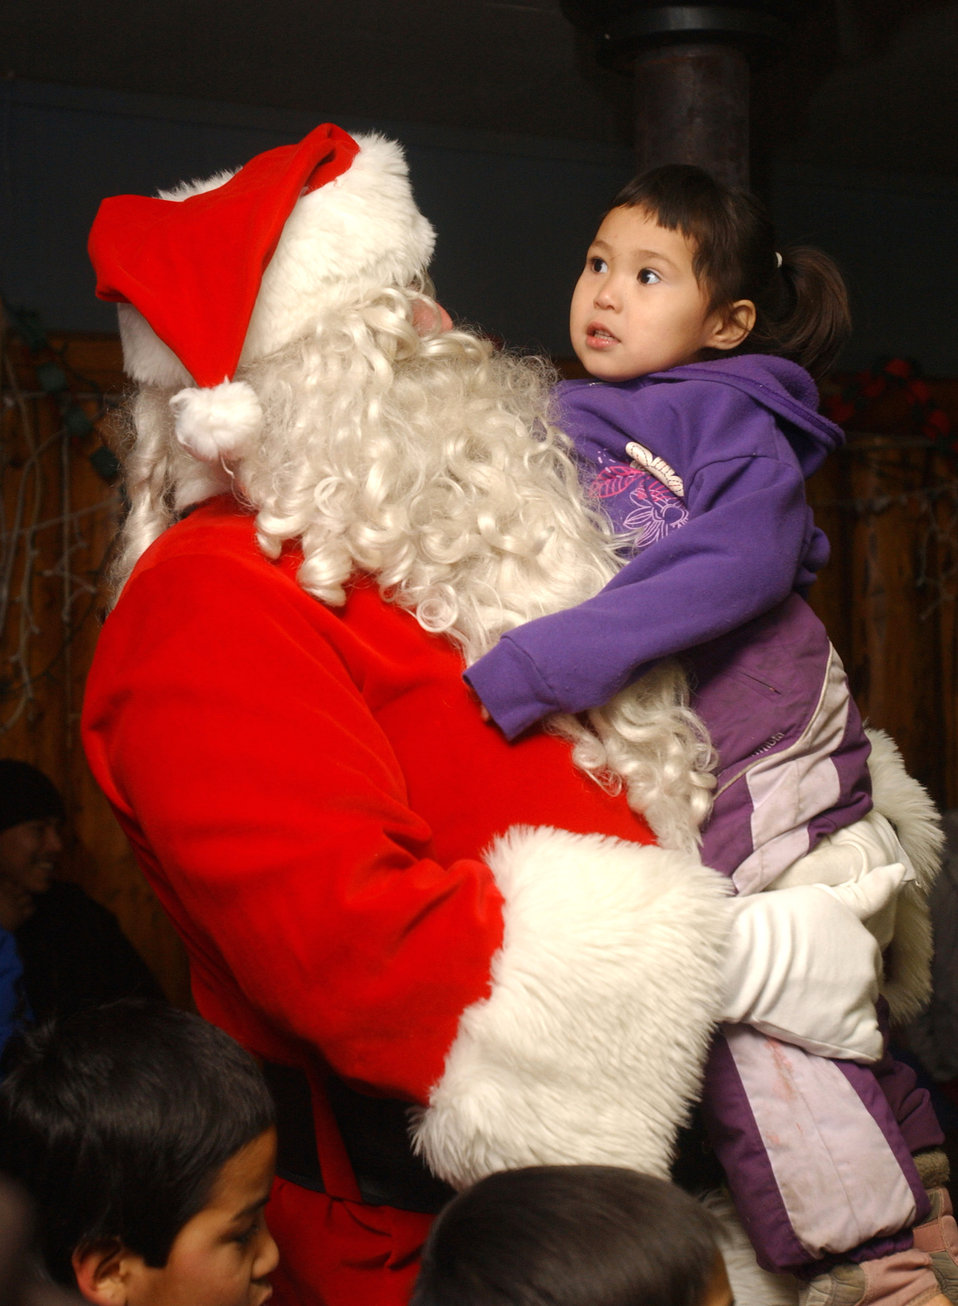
Arctic Village 2006

Santa holds 3-year-old Alyssa Gimmiel after arriving Dec. 11 on his 40th annual trip to Arctic Village (north of Fort Yukon, Alaska). Because of an aircraft change at Elmendorf, this will be the last trip Santa makes with the 517th Airlift Squadron. The Alaska Air National Guard will add Arctic Village to its list of destinations during Operation Santa.